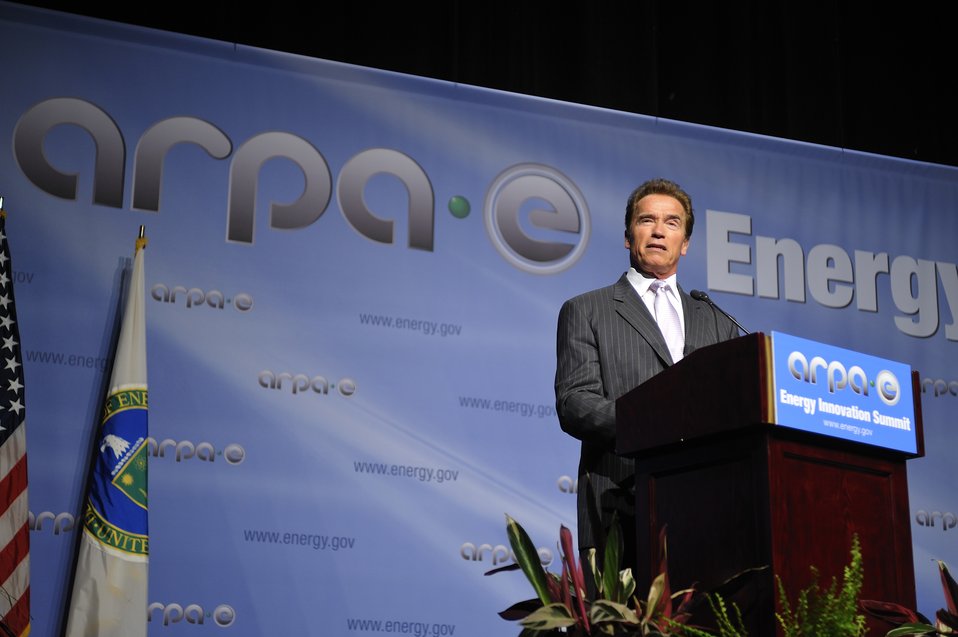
ARPA-E Energy Innovation Summit 2011, 14 of 83

Arnold Schwarzenegger, Former Governor of California.